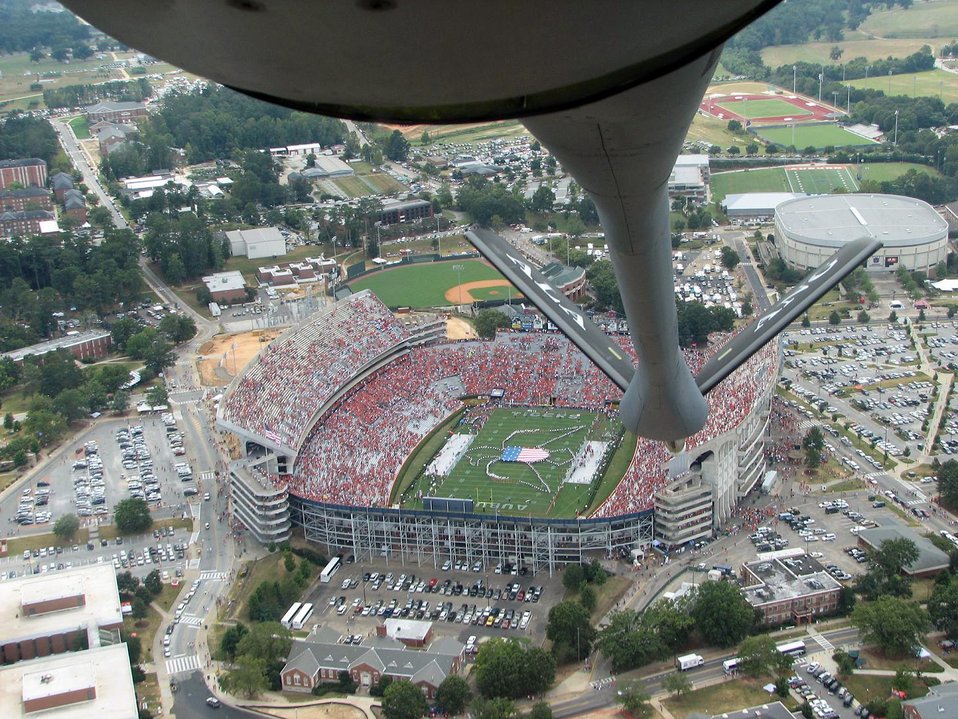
Military appreciation

AUBURN, Ala. -- A KC-135R Stratotanker flies over Auburn University's homecoming game here Sept. 24 in support of military appreciation day and the Air Force anniversary. The KC-135 is from the Alabama Air National Guard's 117th Air Refueling Wing in Birmingham, Ala.